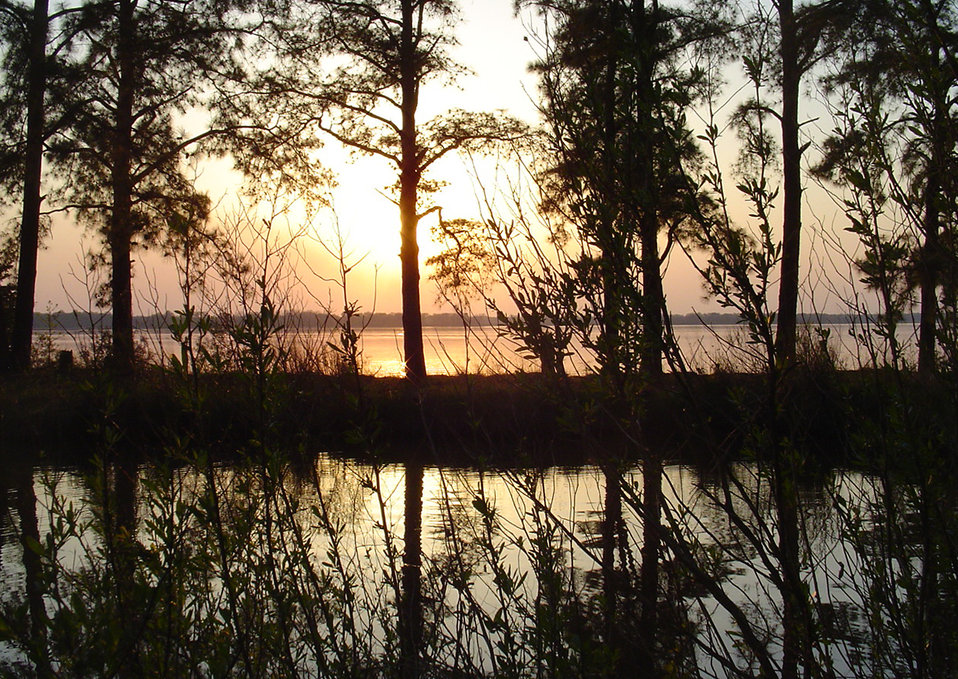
Sunset

Rappahannock River Valley National Wildlife Refuge.